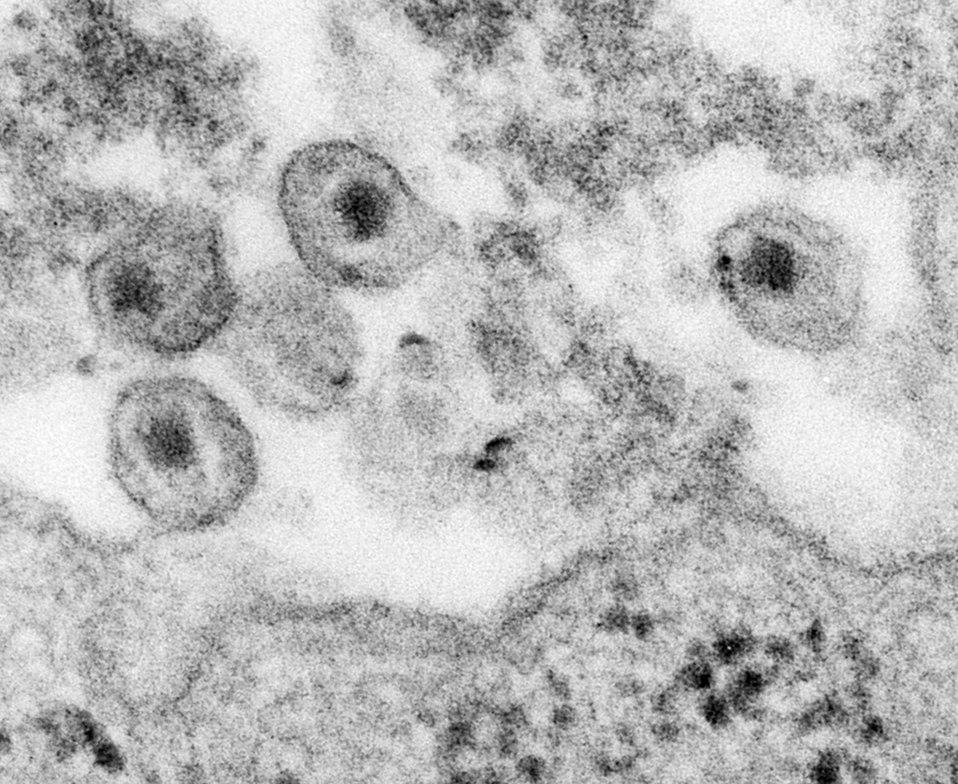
Human immunodeficiency virus (HIV), co-cultivated with human lymphocytes.